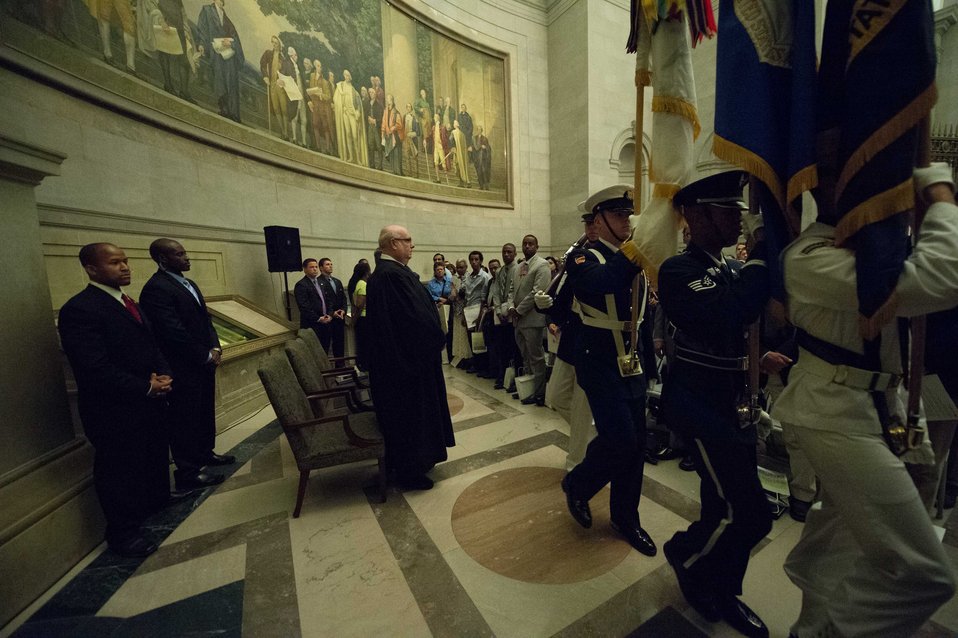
Constitution Day Naturalization Ceremony

The Color Guard marches past the Constitution (in the glass cases behind the judge)